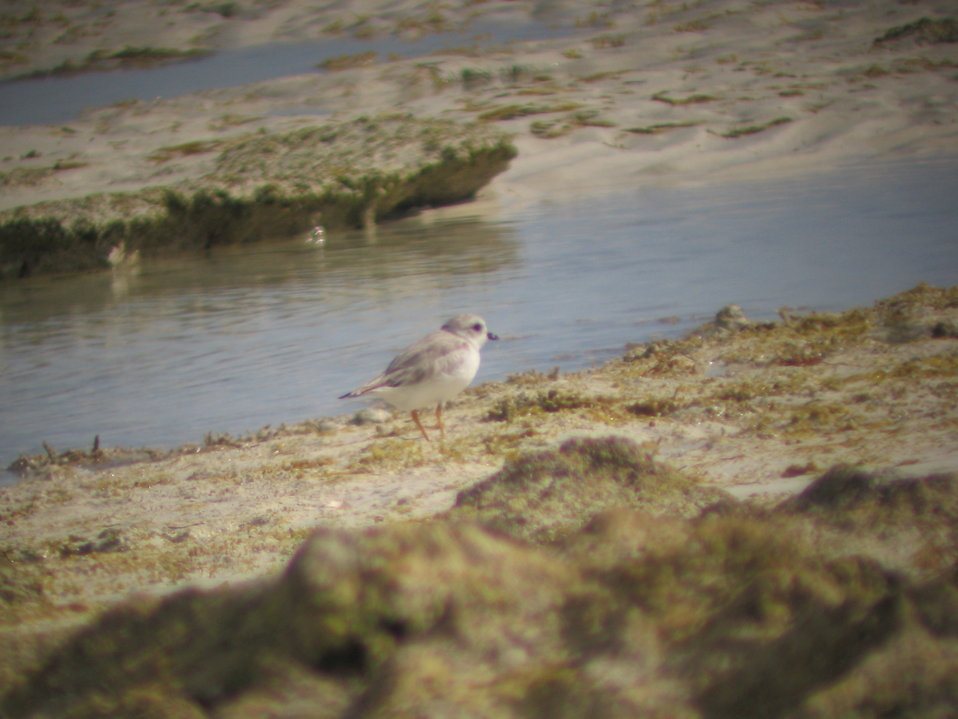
Piping plover foraging in rocky intertidal zone

Photo taken at South Andros Island.